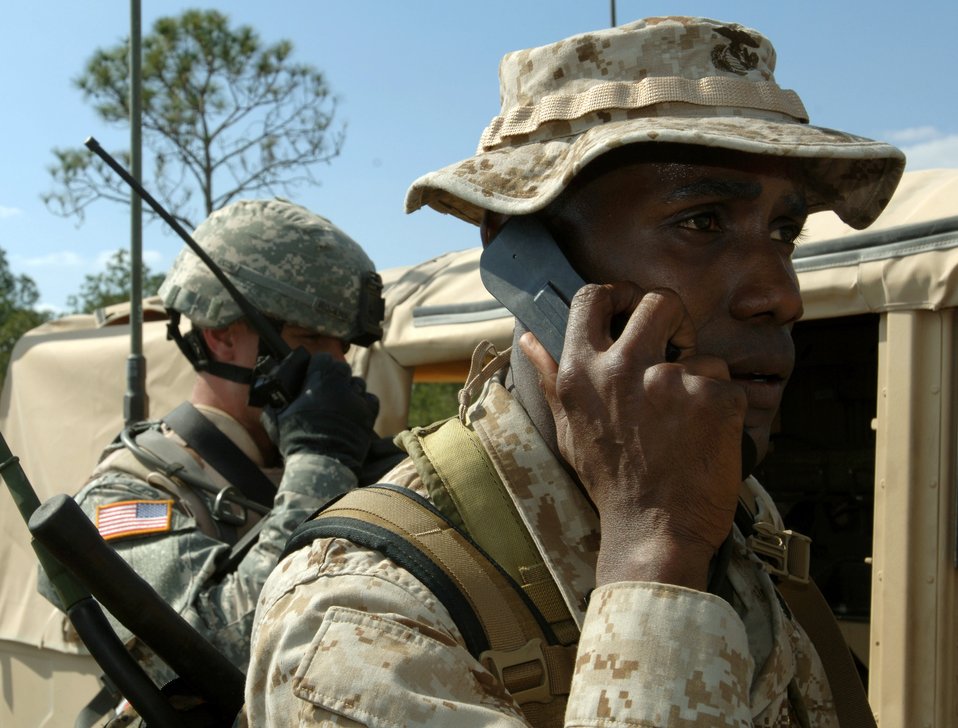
Atlantic Strike III

Marine Staff Sgt. Aamir Greene, right, communicates with aircraft using a PRC-117 radio while Army Staff Sgt. Jimmy Rogers coordinates with a 42-person scout patrol in the mock village at Avon Park, Fla., March 29, 2006, as part of Atlantic Strike III, a joint air and ground training event. Sergeant Greene is with the 4th Air Naval Gunfire Liaison Company and Sergeant Rogers is with the 1st Cavalry Division at Fort Hood, Texas.